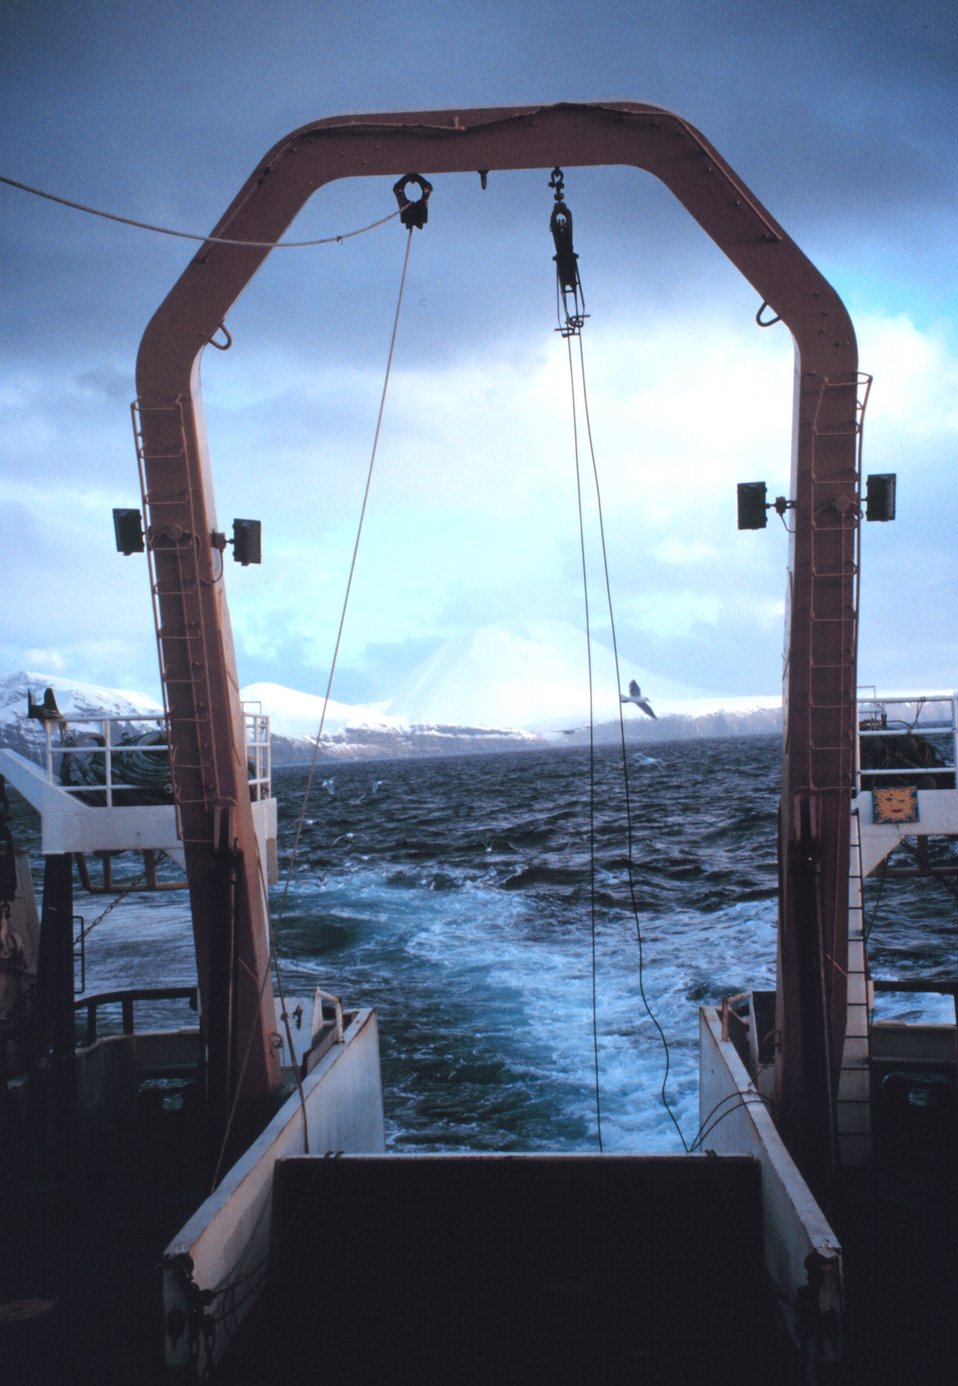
An Aleutian volcano seen through the A-Frame